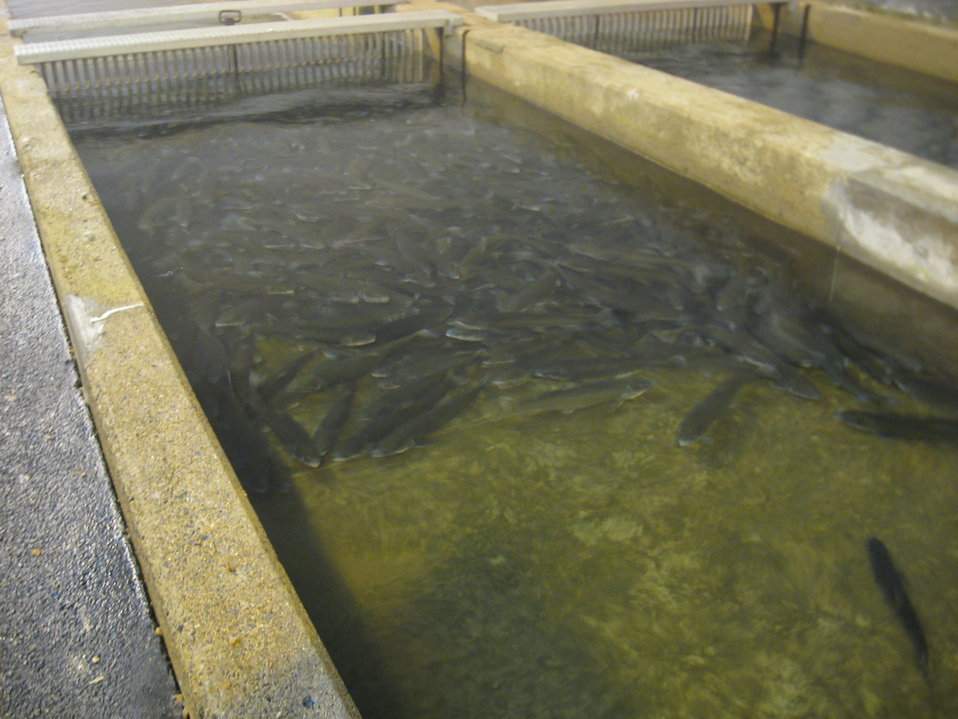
Lake trout in raceway

In early November, five-year-old juvenile lake trout were moved from the Service’s Berkshire National Fish Hatchery in western Massachusetts and were the first released into the raceways at Allegheny National Fish Hatchery. These 2,000 fish will mature in fall 2012 and will produce eggs for future generations of lake trout raised at Allegheny.